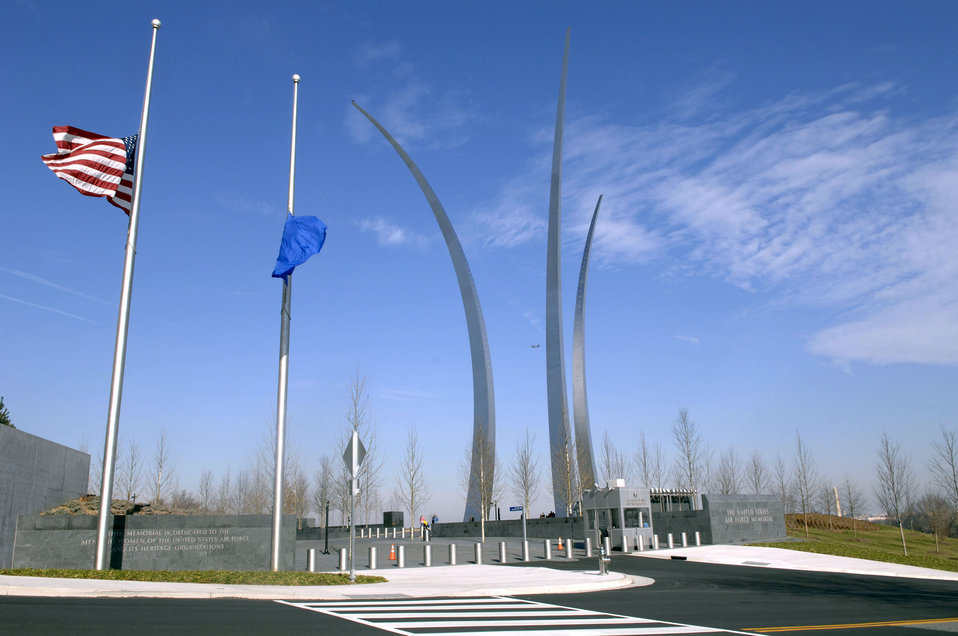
In memory of President Ford

The American flag and the U. S. Air Force flag fly at half staff in front of the Air Force Memorial in Arlington, Va. in honor of President Gerald R. Ford, who passed away Dec. 26 at age 93. During his tenure as president, Ford signed legislation permitting women to enter military academies Oct. 7, 1975. Women first entered the United States Air Force Academy on June 28, 1976. He will be laid to rest Jan. 2 on the grounds of the Gerald R. Ford Presidential Museum in Grand Rapids, Mich., the president's hometown.